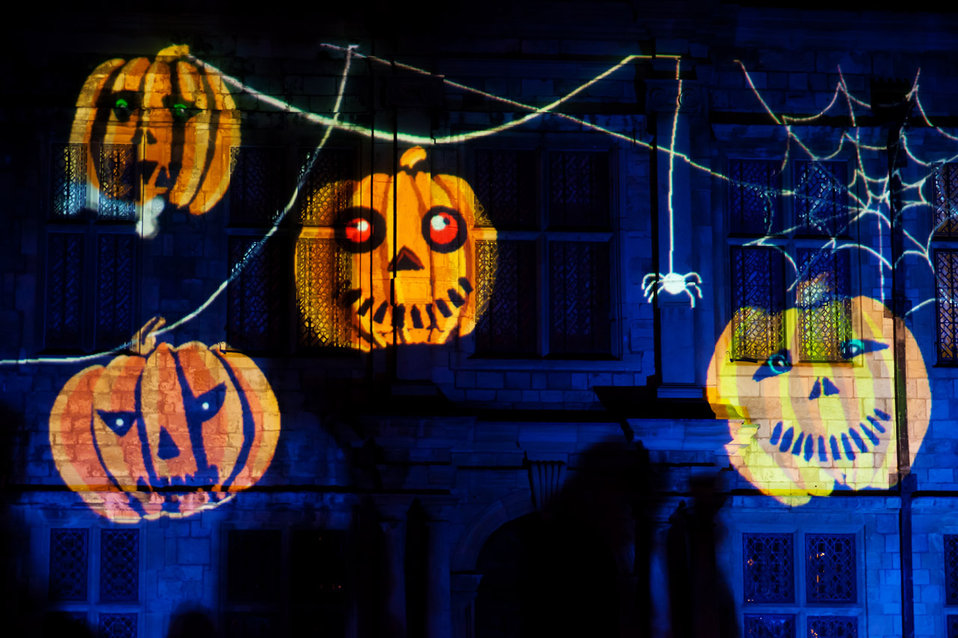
Halloween show

Halloween light projection on an old house.